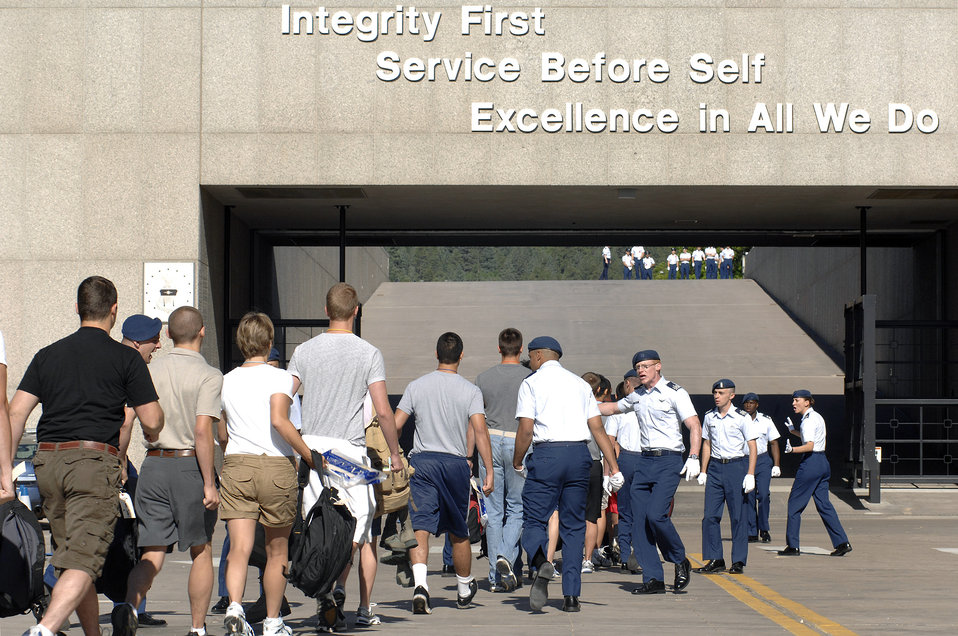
Class of 2014 joins long blue line

The Air Force Academy cadet cadre gets basic cadets to move quickly up the core values ramp during class of 2014 inprocessing June 24, 2010, at the U.S. Air Force Academy, Colo. Nearly 1,300 basic cadets receive immunizations, military ID and cadet area access cards and receive haircuts and uniform items throughout the day.